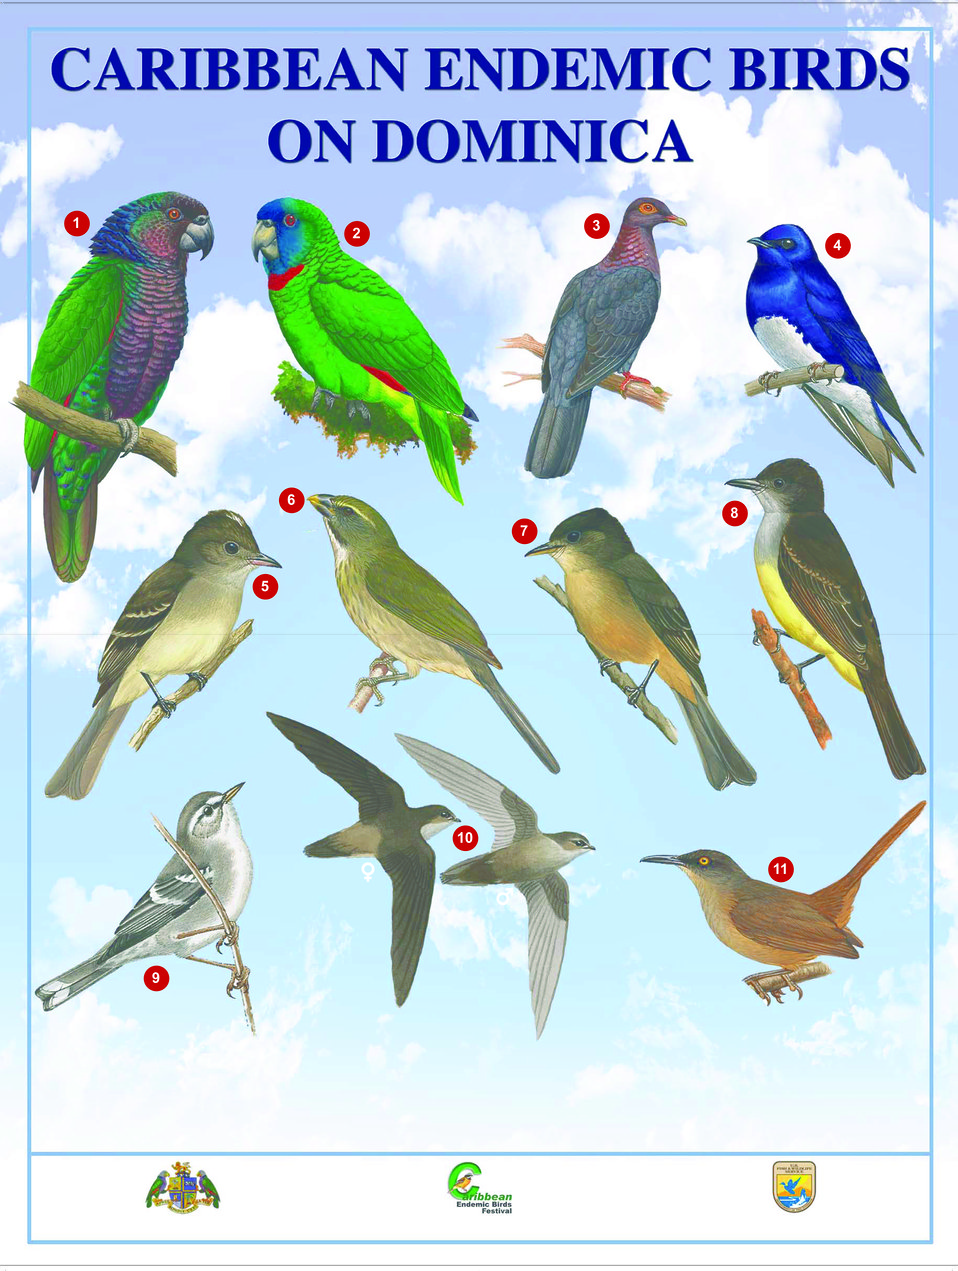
Identification guide for Caribbean endemic birds on Dominica.